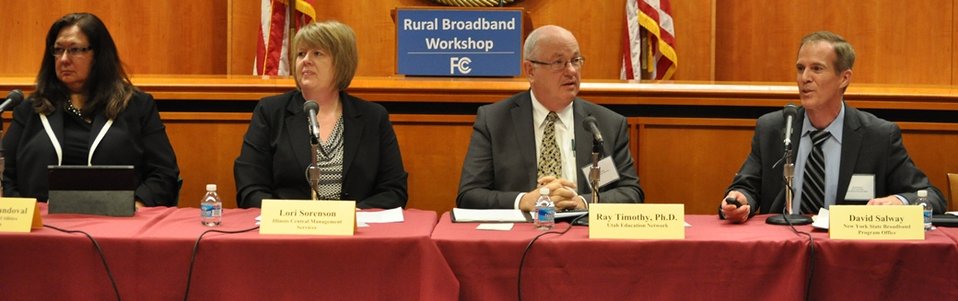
Rural Broadband Workshop: March 19, 2014

Panel 3: State Strategies to Meet the Rural Broadband Challenge